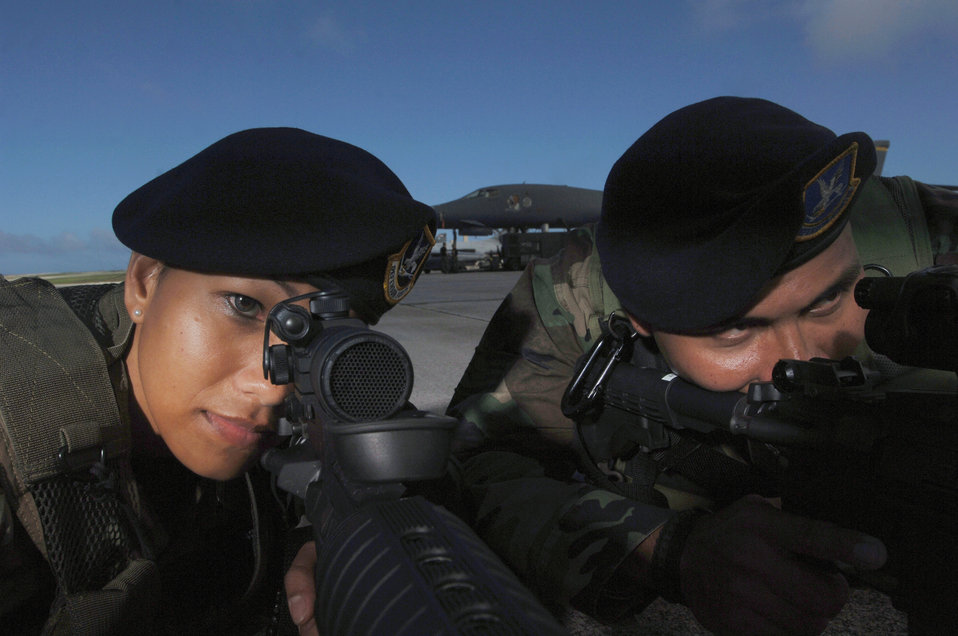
Airman patrol

ANDERSEN AIR FORCE BASE, Guam (AFPN) -- Senior Airman Maria Ronquillo and Staff Sgt. Michael Quitugua look out for enemy forces during training at the flightline here. Both Airmen are assigned to the Guam Air National Guard's 254th Security Forces Squadron. The guardsmen help the wing's active-duty 36th SFS maintain their mission by augmenting for their deployed troops here.